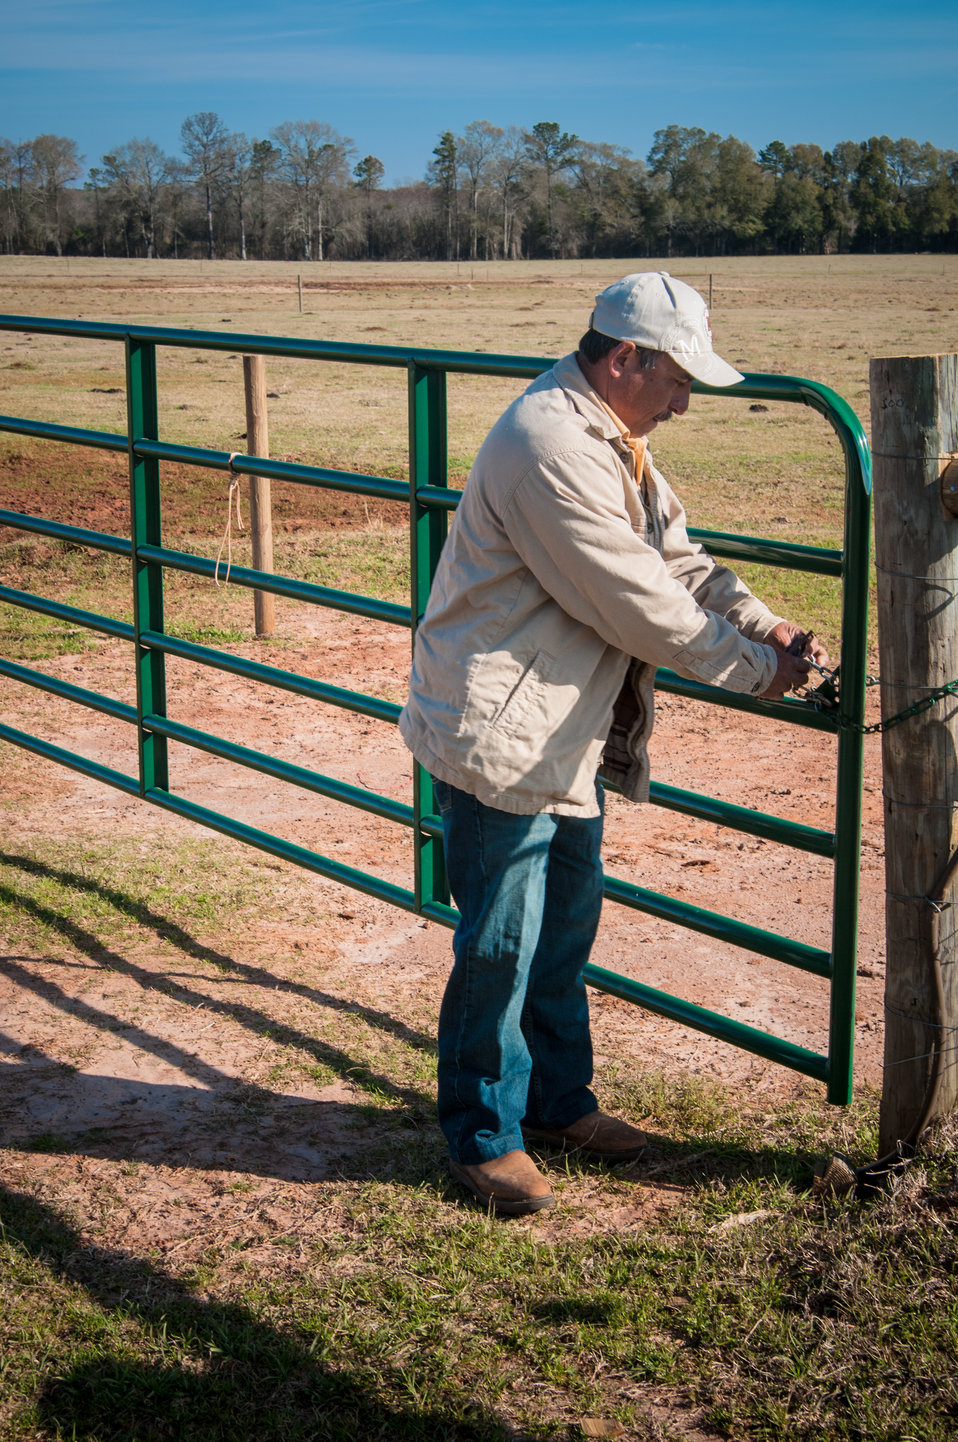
Banamacc Farms owner Raul Moreno closes a gate separating one of his pastures with cross fencing on his farm in Calhoun County, GA on Mar. 7, 2013. Moreno was able to install the cross fencing with a U.S. Department of Agriculture (USDA) National Resources Conservation Service (NRCS) Environmental Quality Incentive Program (EQIP) contract. Moreno was able to improve pasture and grazing management and rotate his cattle through different pastures on a grazing schedule to assist with soil and water conservation. The USDA Strike Force Initiative has designated Calhoun County, GA as a Strike Force county selected to receive assistance to relieve persistent poverty in historically high-poverty counties.